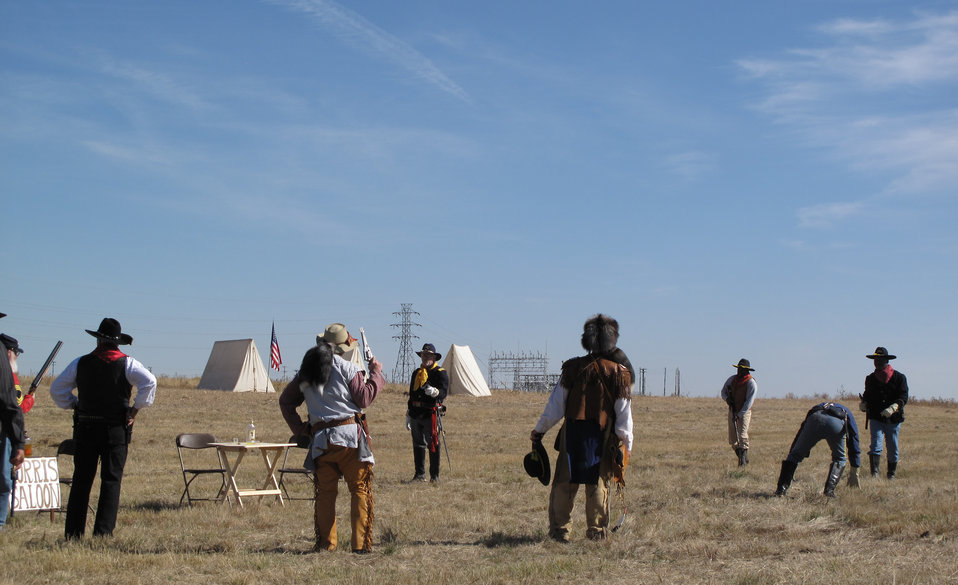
Refuge Round-up 2010

Saloon reenactment.